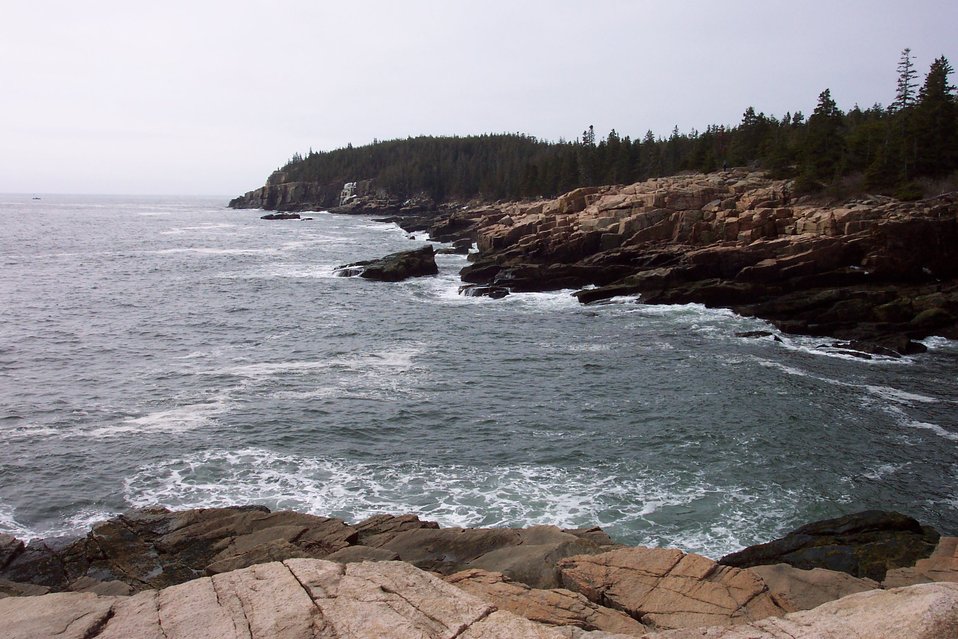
Morning fog and mist starting to burn off. Looking south to Otter Cliffs area.